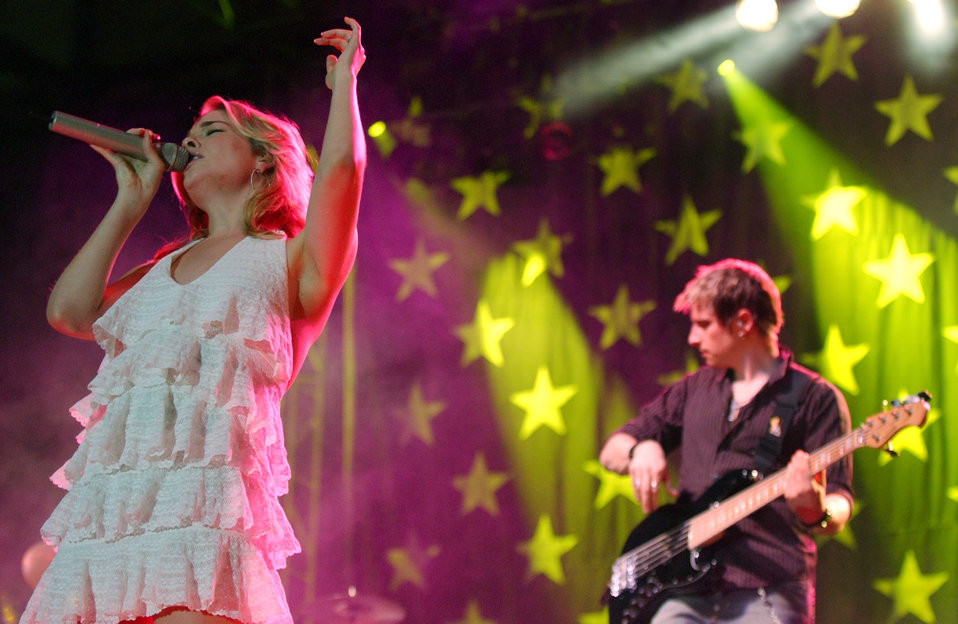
Singing stars

RAMSTEIN AIR BASE, Germany -- LeAnn Rimes performs for military members while visiting here Sept. 23. The concert was part of a promotion by the wing's 435th Services Squadron.